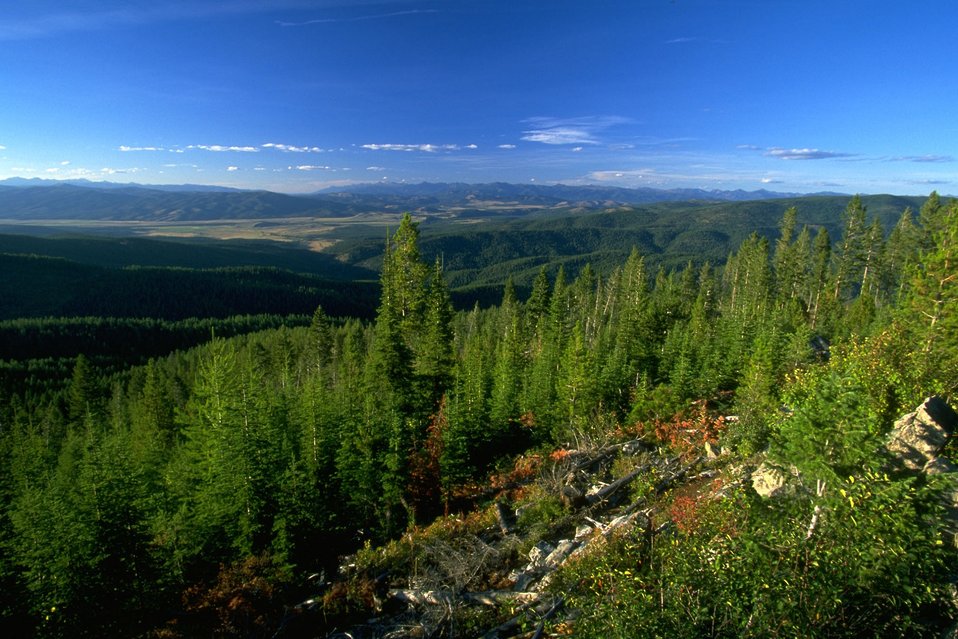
Garnet Back Country Byway--view from overlook